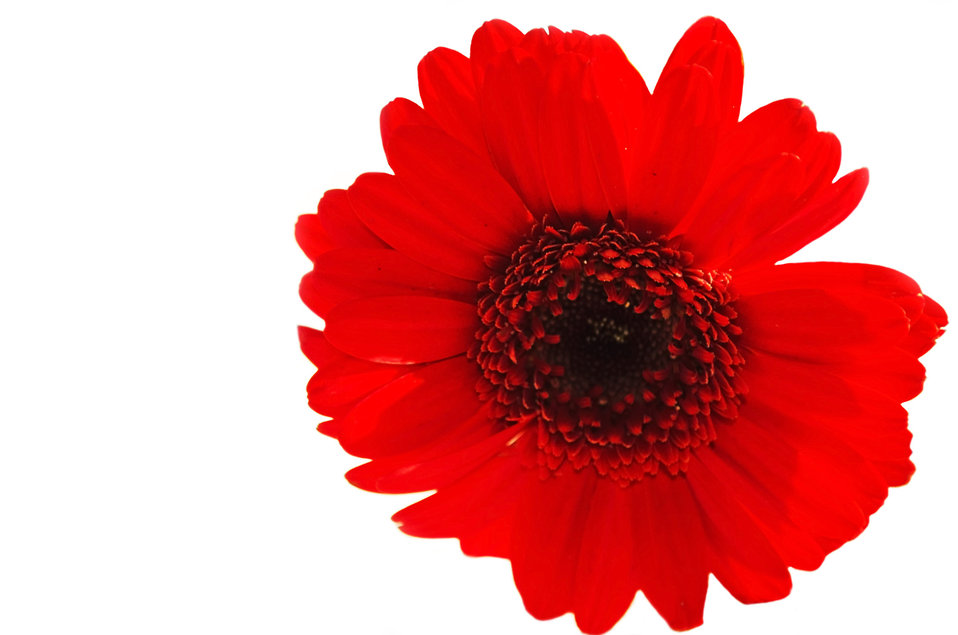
Flower

Nice flower.